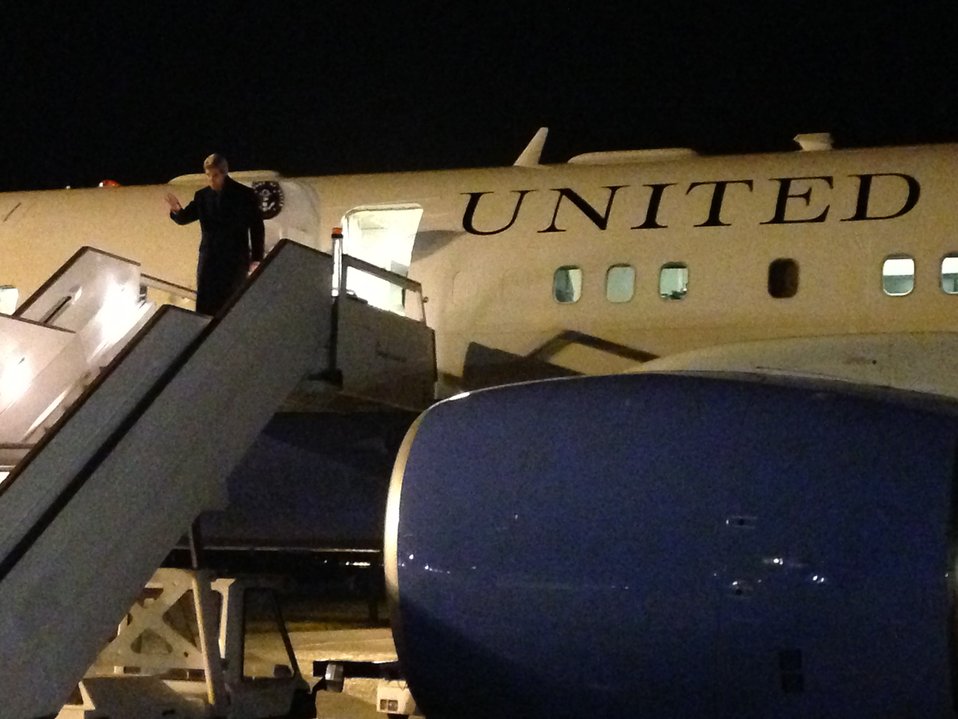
Secretary Kerry Arrives in London, United Kingdom

U.S. Secretary of State John Kerry waves as he exits U.S. Air Force Boeing 757 upon arrival to London, United Kingdom, February 24, 2013, during his inaugural overseas trip as Secretary of State.